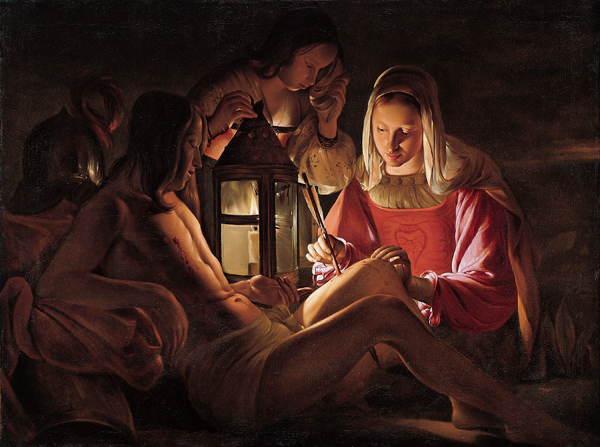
'Saint Sebastian Tended by Irene', attributed to Georges de La Tour, early 1630s, oil on canvas, Kimbell Art Museum